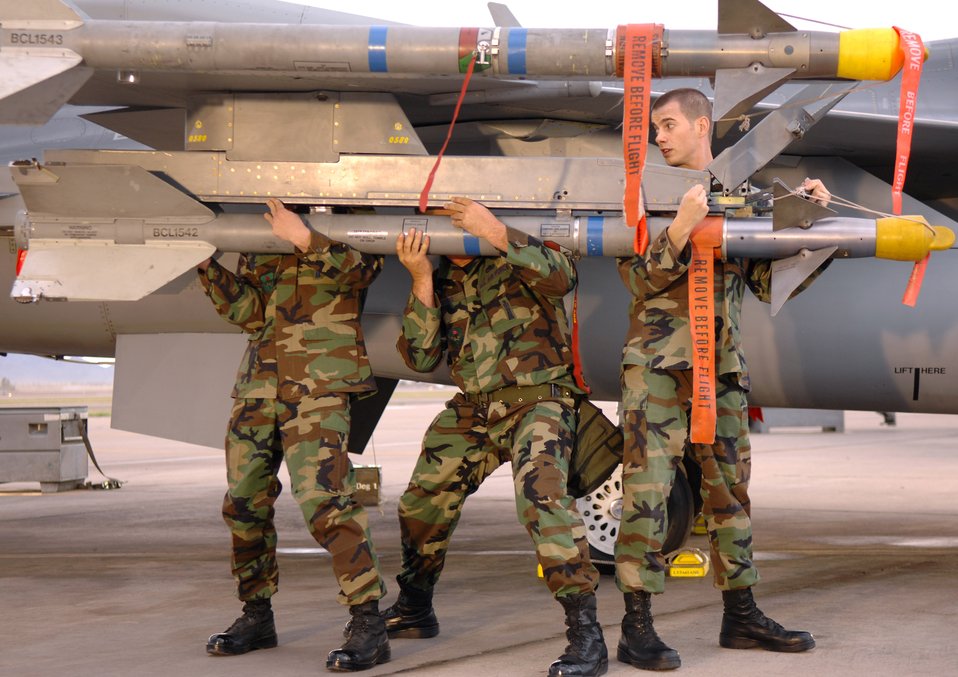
Weather forecaster brings morning show to Luke AFB

(From left) Senior Airman David Foster, Tech. Sgt. Greg Goodro and Staff Sgt. Cameron Linegar load an AIM-9 onto the wing of an F-16C Fighting Falcon during Good Morning Arizona, a morning show filmed at Luke Air Force Base, Ariz., March 22. The show featured demonstrations from different career fields throughout the Air Force and helped promote Air Force Week.